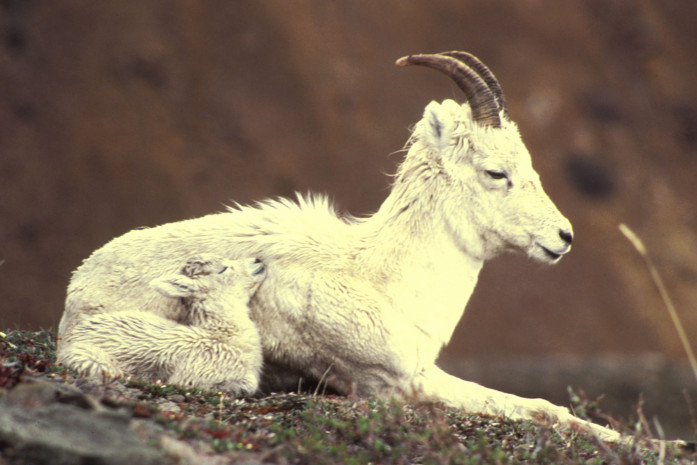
dall sheep ewe and lamb

Arctic National Wildlife Refuge, AK